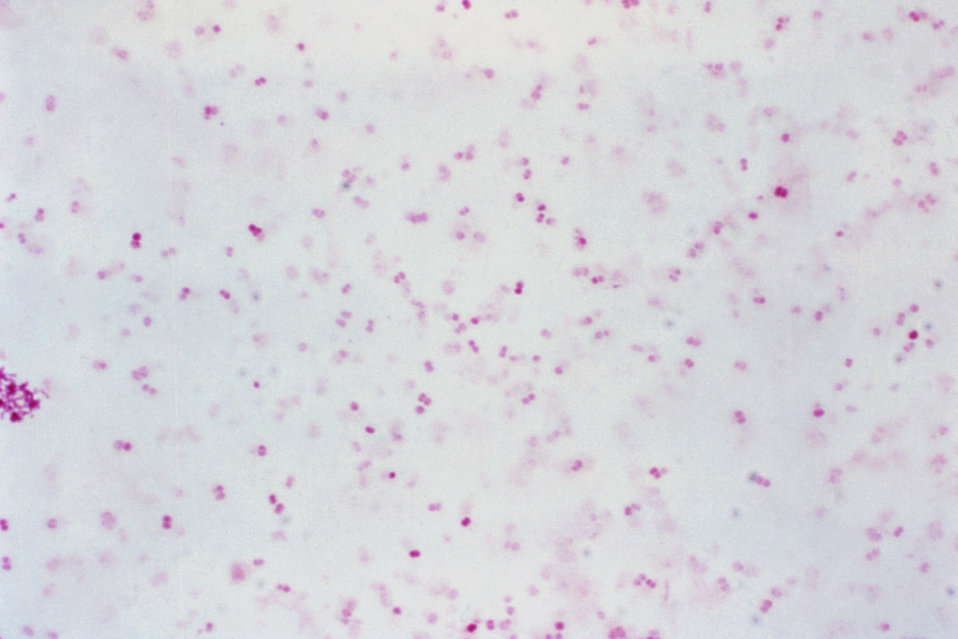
This photomicrograph reveals the presence of the Gram-negative diplococcus, Neisseria gonorrhea.